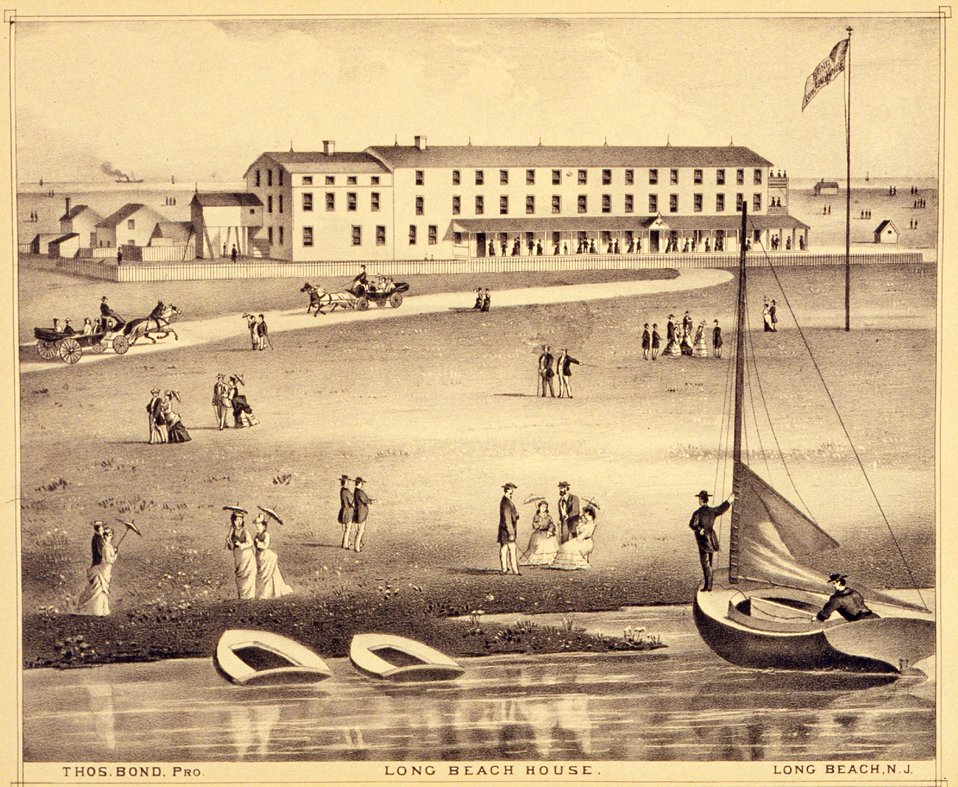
Long Beach House, Long Beach, N.J. P. 315. 'Historical and Biographical Atlas of the New Jersey Coast,' by T. F. Rose, 1878.